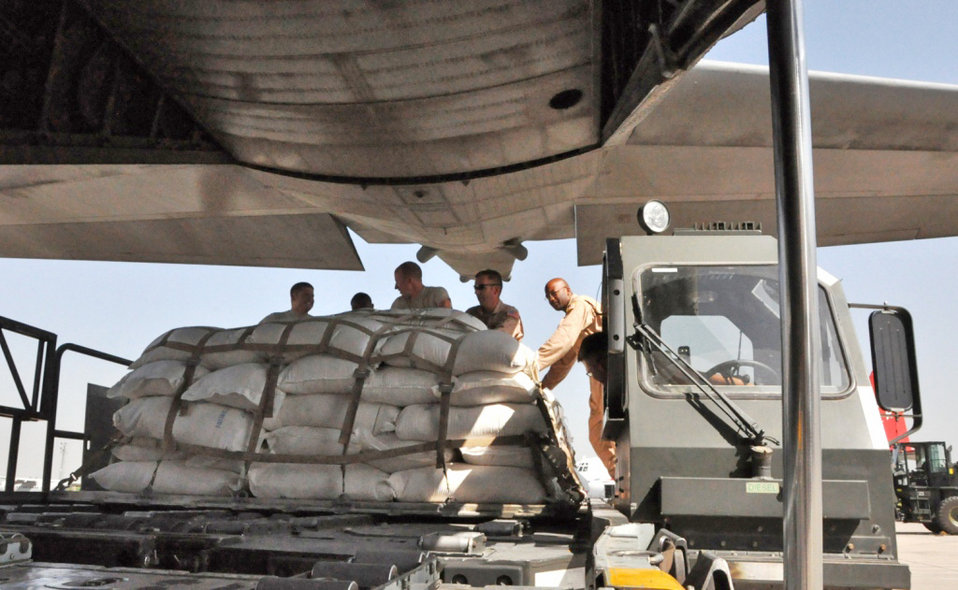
Airmen continue flow of nation-wide distribution of flood relief supplies in Pakistan

Members of a contingency response element in Pakistan load a C-130 Hercules with pallets of flood relief supplies Sept. 20, 2010, at Pakistan Air Force Base Chaklala. The CRE deployed from the 621st Contingency Response Wing, Joint Base McGuire-Dix-Lakehurst, N.J., to augment operations at the Pakistan air force's Central Flood Relief Cell at the air base. To date, U.S. military personnel and aircraft, working in partnership with the Pakistan military, have delivered more than 3.8 million kilograms of relief supplies and rescued more than 16,000 people throughout the flood-stricken areas of Pakistan.